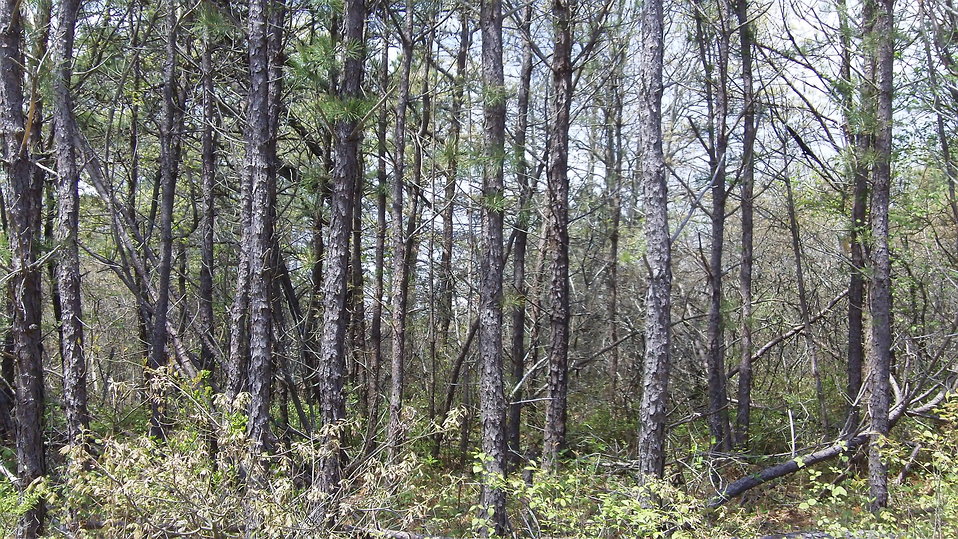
New England cottontail habitat

These rabbits stick near cover to minimize risk of being detected by predators. They feed on stems, buds and bark in the fall and winter, and plants like chickweed or clover in the spring and summer.